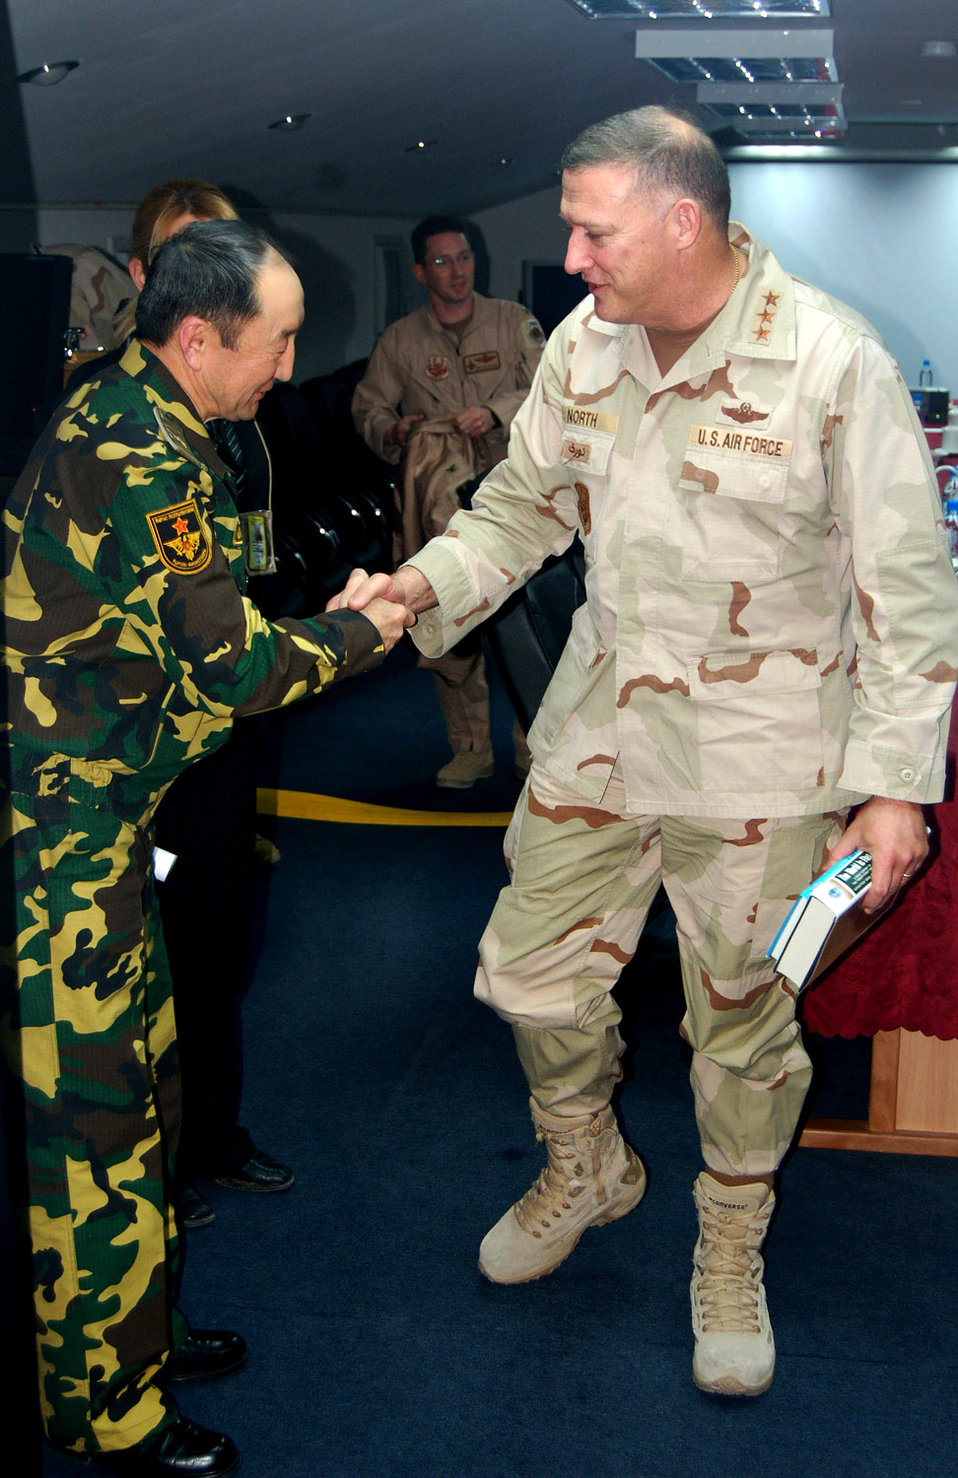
U.S., Kyrgyz officials meet

Lt. Gen. Gary North, U.S. Central Command Air Forces Commander, concludes a meeting with Gen. Kubanydjbek Oruzbaev, First Deputy Minister of Defense of Kyrgyzstan, on March 7 in the Wing Headquarters Conference Room at Manas Air Base. At the meeting, General North and General Oruzbaev discussed matters of mutual interest to both countries.